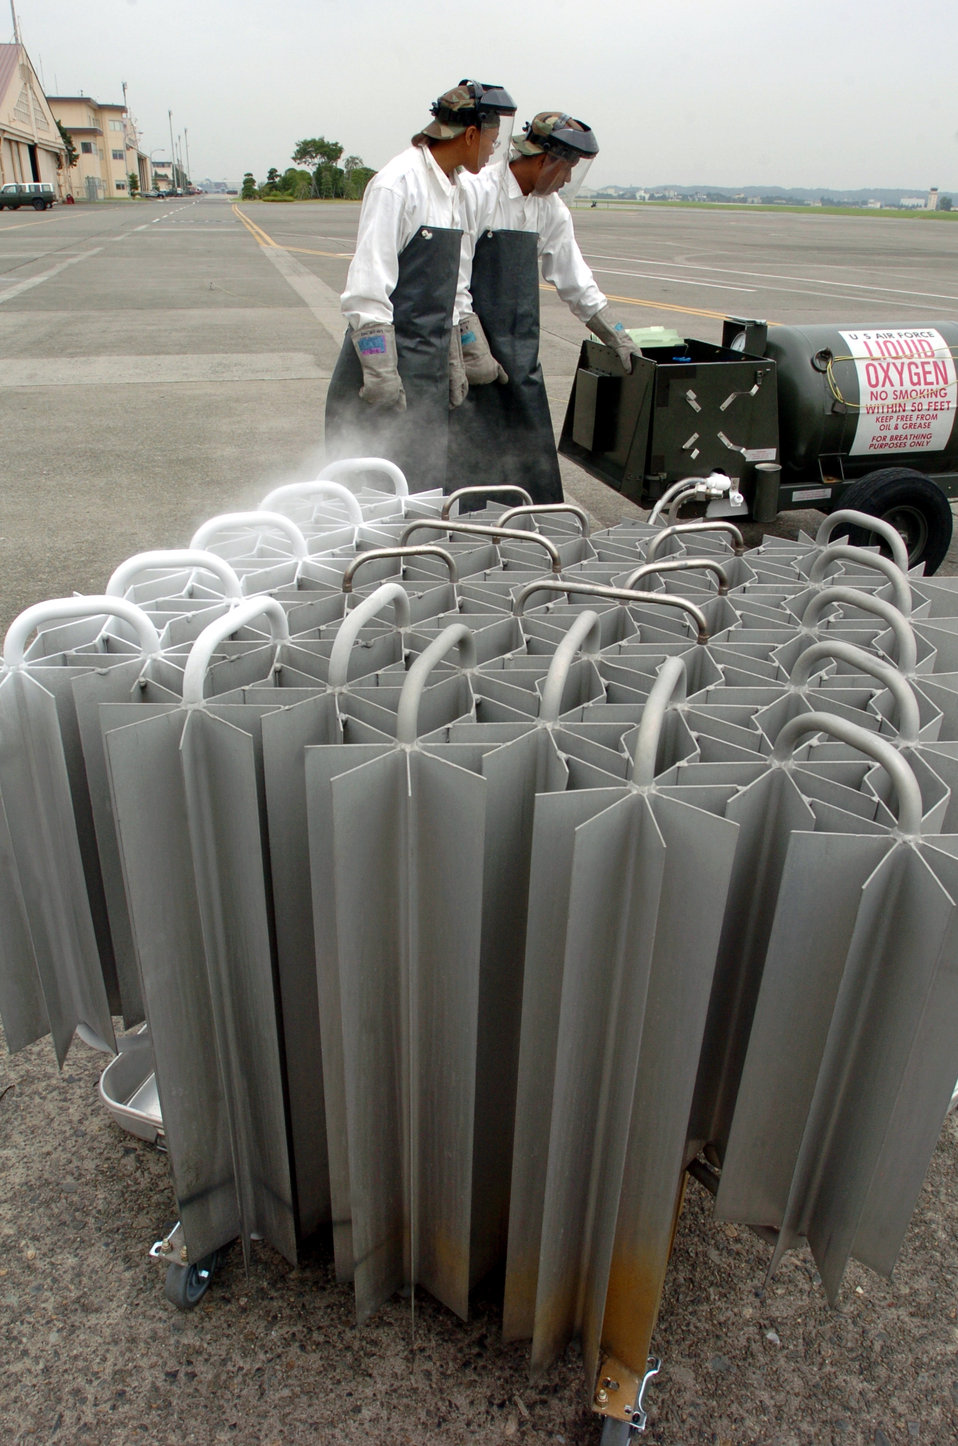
A draining task

YOKOTA AIR BASE, Japan -- Airman 1st Class Andrea Jones (left) and Senior Airman Garry King do an annual check of a heat exchanger. The exchanger helps drain liquid oxygen carts faster. Technicians with the 374th Maintenance Squadron here inspect, calibrate, repair and maintain the cryogenic/compressed gas units.